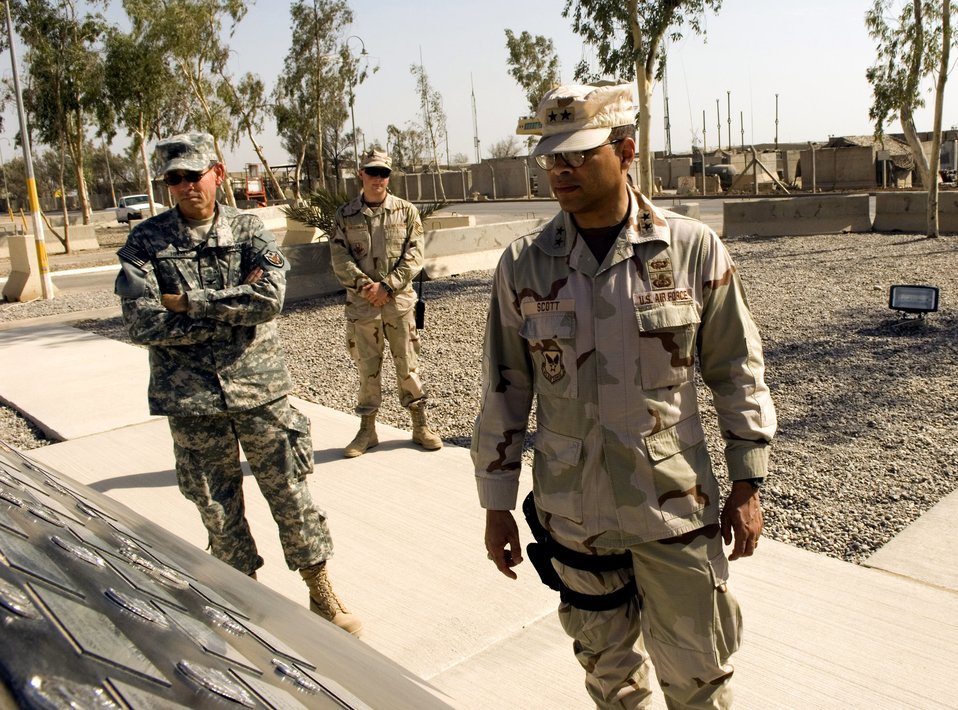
General shares Tuskegee heritage with Balad Airmen

Maj. Gen. Darryl A. Scott looks over the 332nd Air Expeditionary Wing's Fallen Airman Memorial along with Army Col. Anthony Helm and Staff Sgt. Mike Shellhaas July 31 at Balad Air Base, Iraq. General Scott is the commander of the Joint Contracting Command Iraq/Afghanistan. Colonel Helm is assigned to the JCC-I/A staff member and Sergeant Shellhaas is assigned to the 332nd AEW Protocol Airman. General Scott is the son of a Tuskegee Airman and took the opportunity to speak about his heritage with Balad AB Airmen.